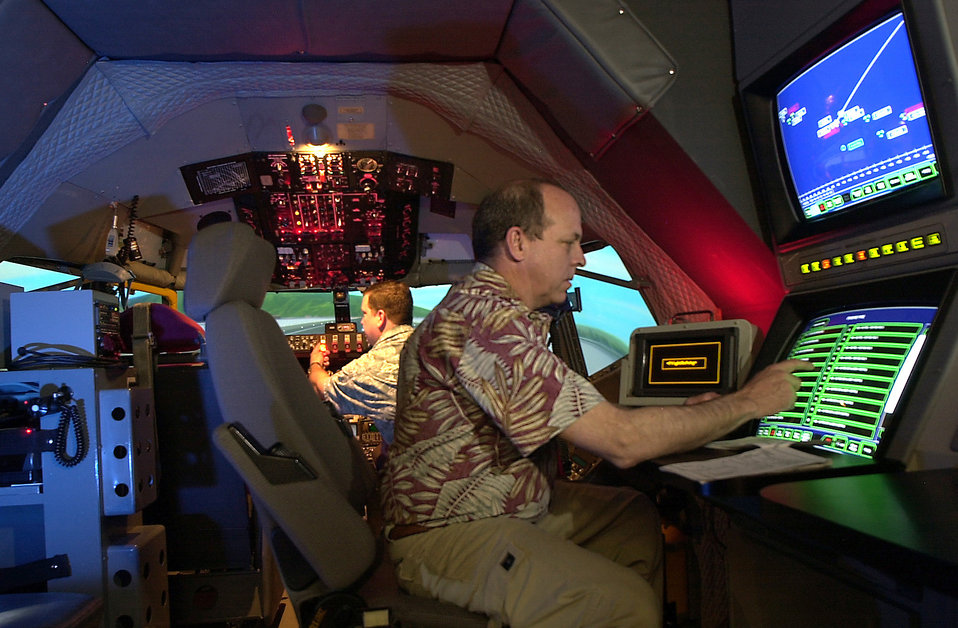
This is a drill

ROYAL AIR FORCE MILDENHALL -- Bruce Golson (front) and Jay Kealhofer demonstrate a simulated emergency aircraft scenario. They run the simulator at the 100th Operations Support Squadron here. The simulator is one of 20 flight simulators that make up the KC-135 Stratotanker aircrew training system located at 14 U.S. and two overseas locations.